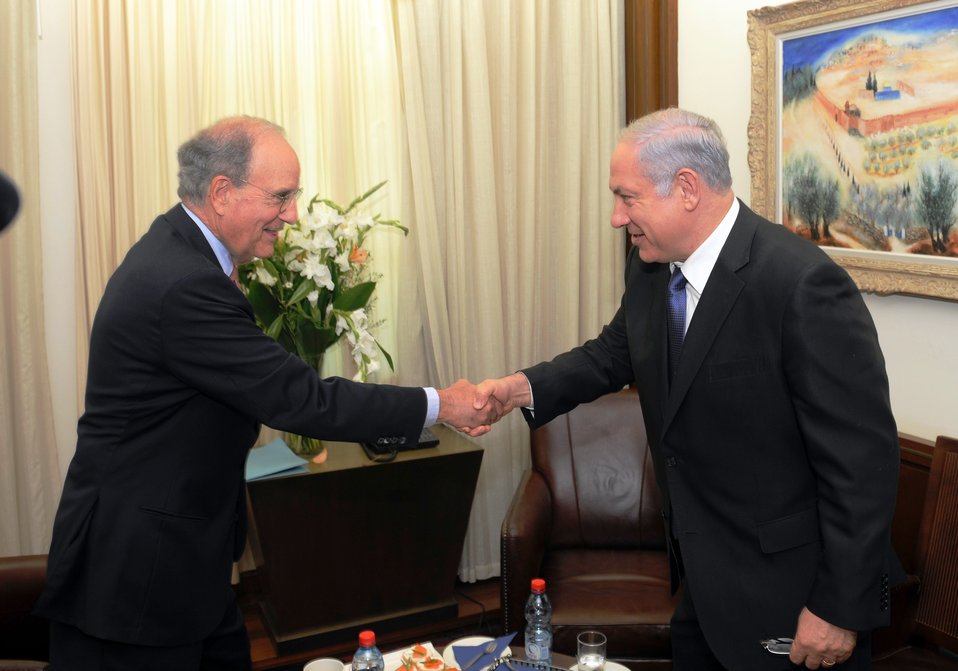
Special Envoy Mitchell Shakes Hands With Israeli Prime Minister Netanyahu

U.S. Special Envoy for Middle East Peace George Mitchell shakes hands with Israeli Prime Minister Benjamin Netanyahu at the Prime Minister's office in Jerusalem onJuly 16, 2010.